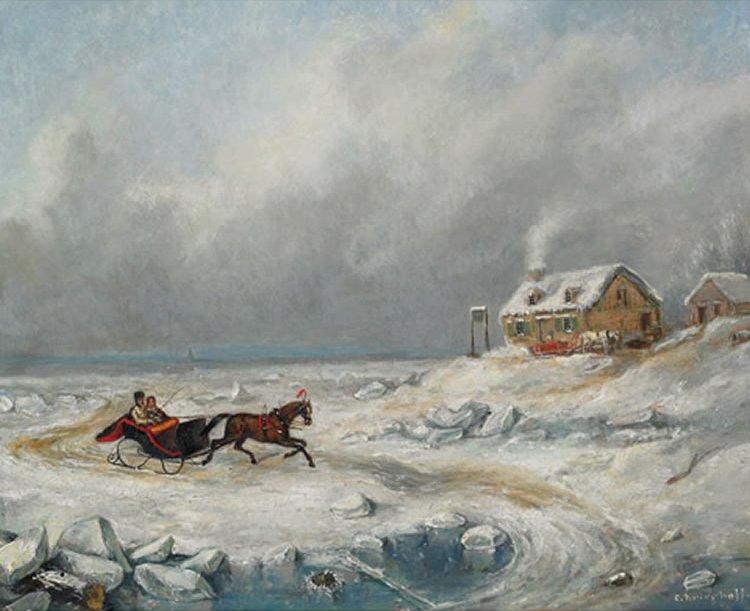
Ice Road, Near Quebec, oil painting by Cornelius Krieghoff, 12.5 x 15.25 in.